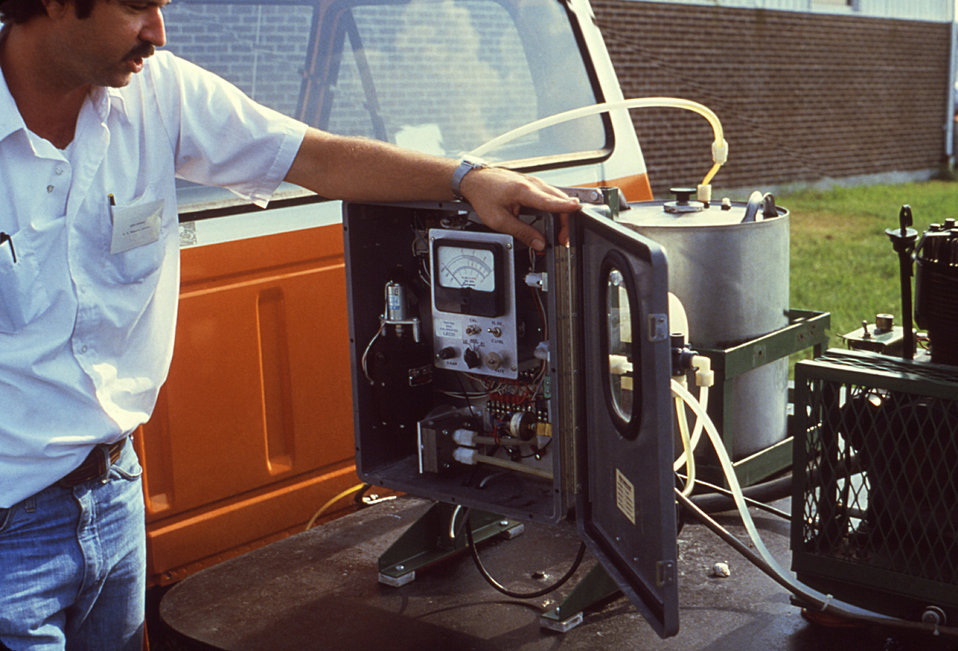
This 1981 image depicts a field technician inspecting the CV control panel, which controls the LECO-HD ULV (ultra-low volume) non-thermal fog generator mounted to this New Orleans, Louisiana mosquito control vehicle.